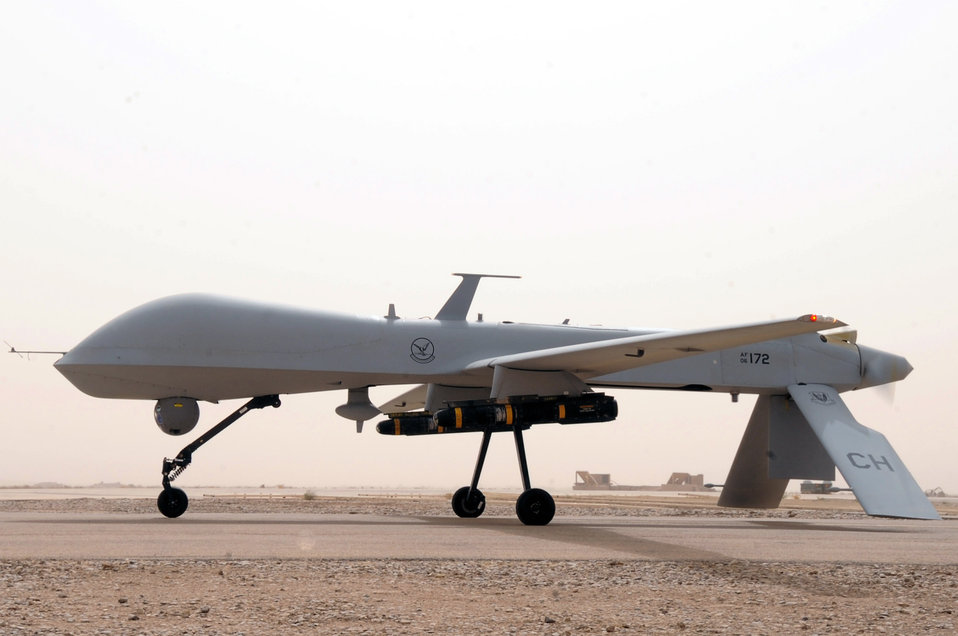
Sept. 9 airpower summary: Predator fires missiles, disarm enemy

A MQ-1 Predator unmanned aircraft takes off in support of Operation Enduring Freedom. Through the use of advanced capabilities, focused doctrine and detailed training the predator provides integrated and synchronized close-air combat operations, to include intelligence, surveillance and reconnaissance.